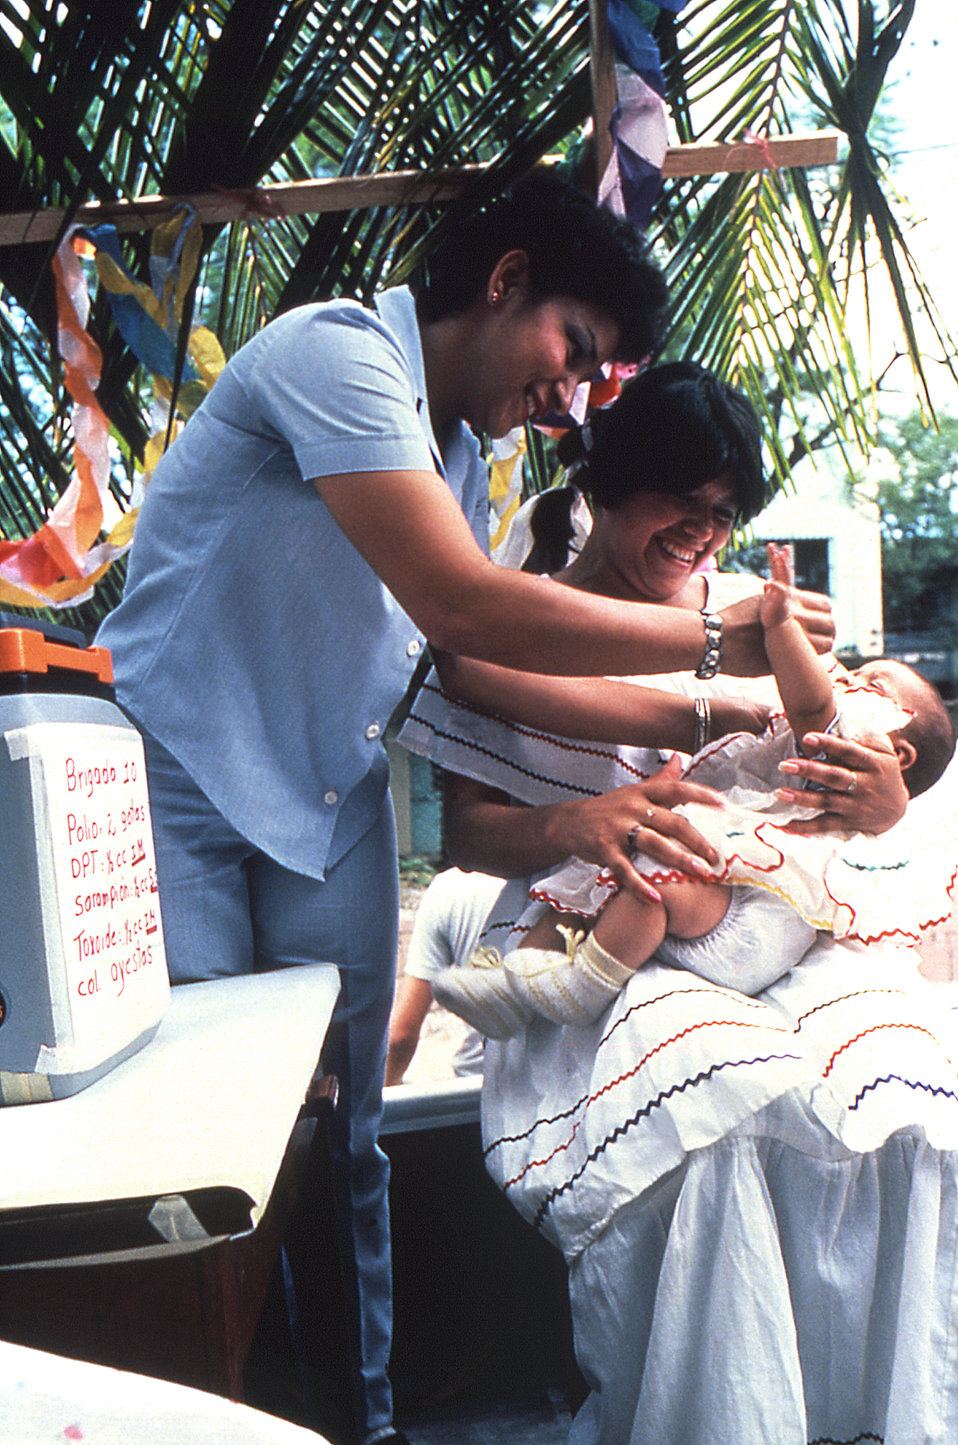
Captured in an unidentified Latin-American country, this 1989 image depicts a healthcare worker who was going door to door, conducting epidemiologically-related interviews in order to find out whether or not the appropriate polio vaccine had been administered to both the children, and adults of each visited household, in order to prevent them from acquiring poliomyelitis. If not, she would then administer the oral form of the vaccine, as she was doing here with this infant, to those household members at home at the time, and return to vaccinate any remaining members.